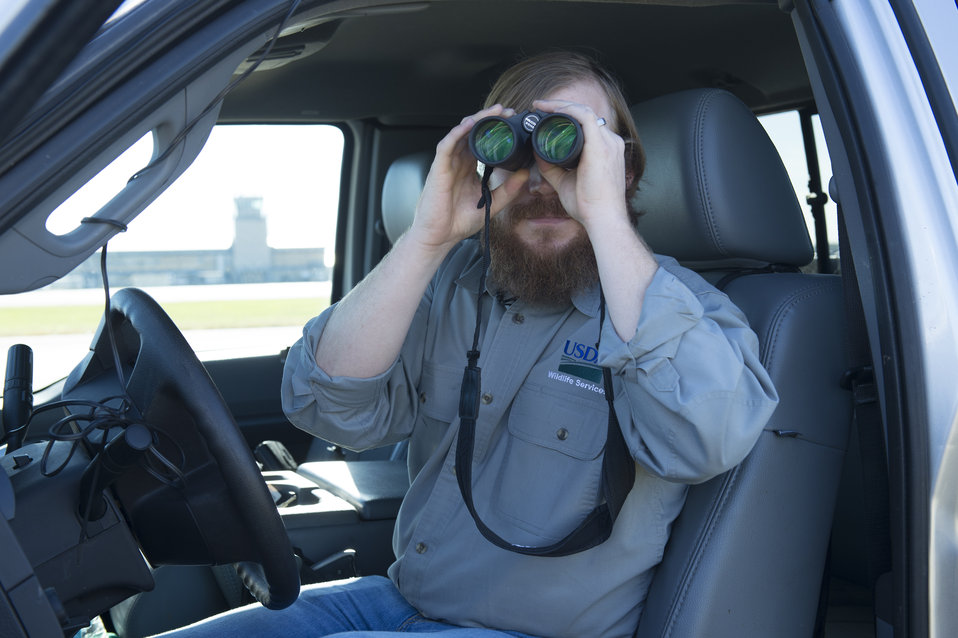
The U.S. Department of Agriculture’s (USDA) Animal and Plant Health Inspection Service (APHIS) Wildlife Services (WS) assists with the humane removal of animals from the Naval Air Station Joint Reserve Base in Belle Chase, LA on Wednesday, Nov. 20, 2013. Animals that wander onto the airstrip are dangerous to aircraft on take off and landing.